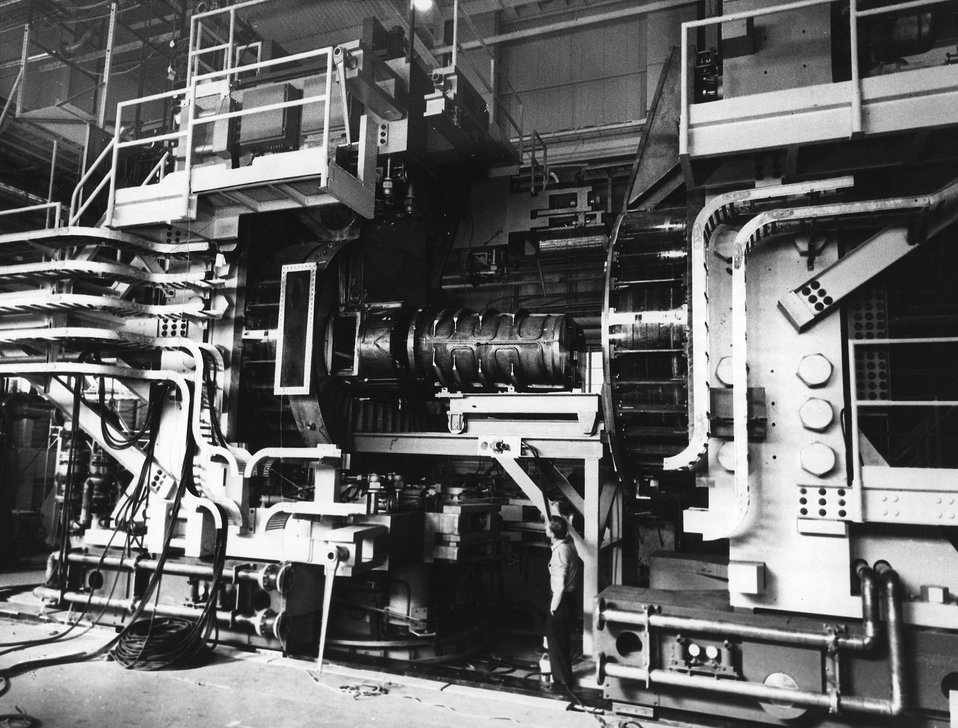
The photograph shows the 80-inch bubble chamber complex partially disassembled. Somewhat to the left of the center of the picture, the bubble chamber itself is visible with the 12' x 25' beam window left open. At the center, in front of the chamber, appears a 'safety chamber' with holes for illumination and photography at the side opposite the bubble chamber. c. 1963